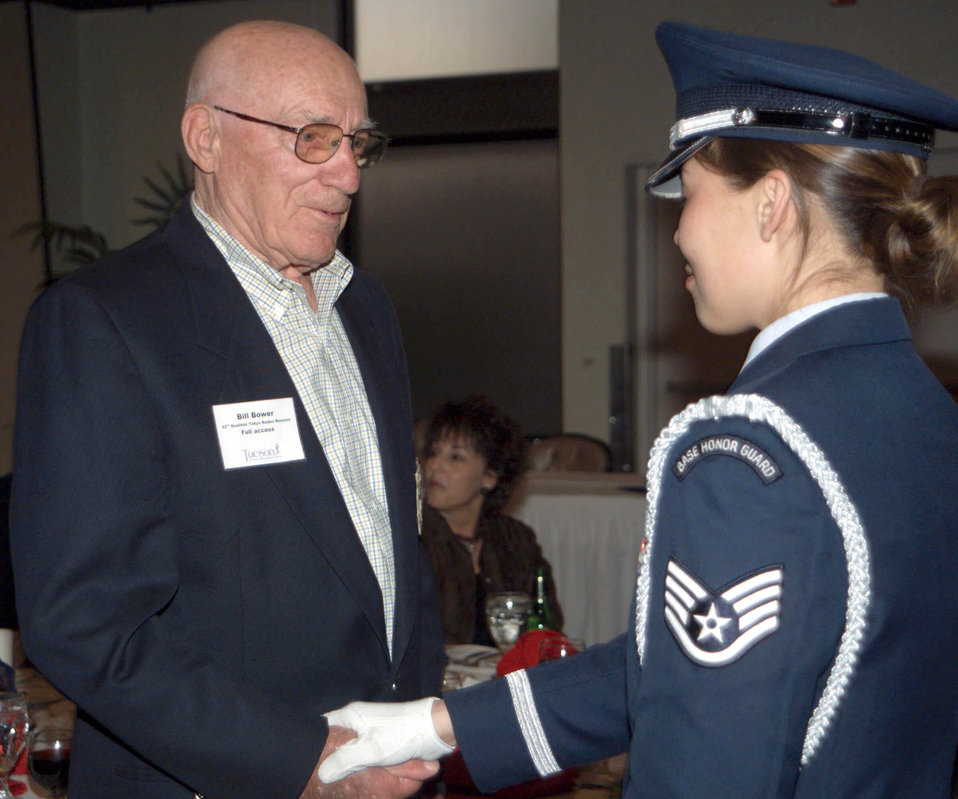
Doolittle Raiders reunite

DAVIS-MONTHAN AIR FORCE BASE, Ariz. -- Staff Sgt. Michelle Butler meets Bill Bower, a Doolittle Raider, during a dinner here April 15 honoring the group's 62nd reunion. Doolittle Raiders were part of the pivotal mission April 18, 1942, to bomb Tokyo as symbolic revenge against Japan's attack on Pearl Harbor, Hawaii. The mission was led by then-Lt. Col. James Doolittle. Seventeen of the 80 raiders are alive today. Sergeant Butler is a member of the base's elite honor guard.